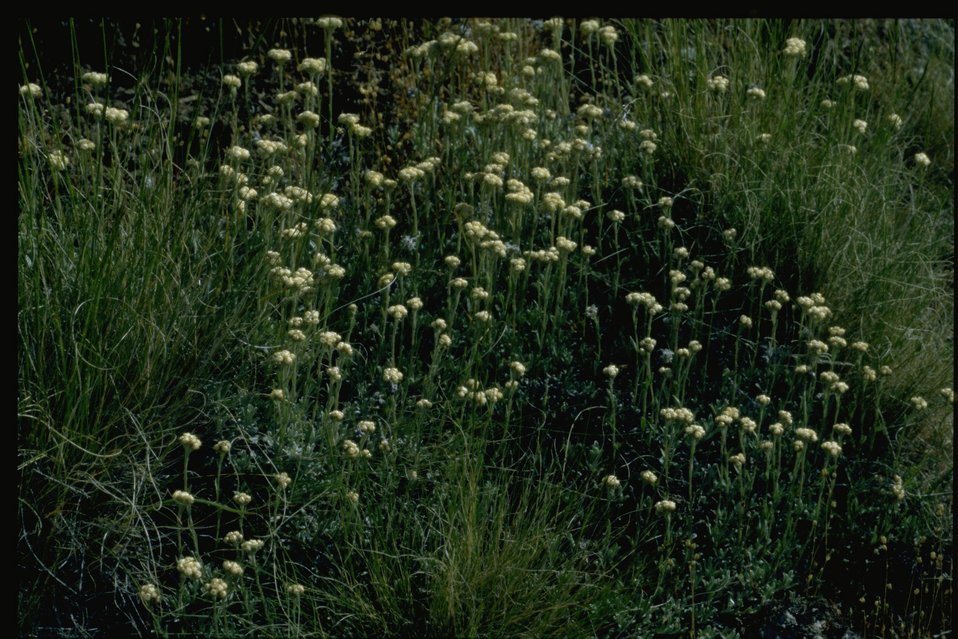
Farshot of littleleaf pussytoes (Antennaria microphylla).